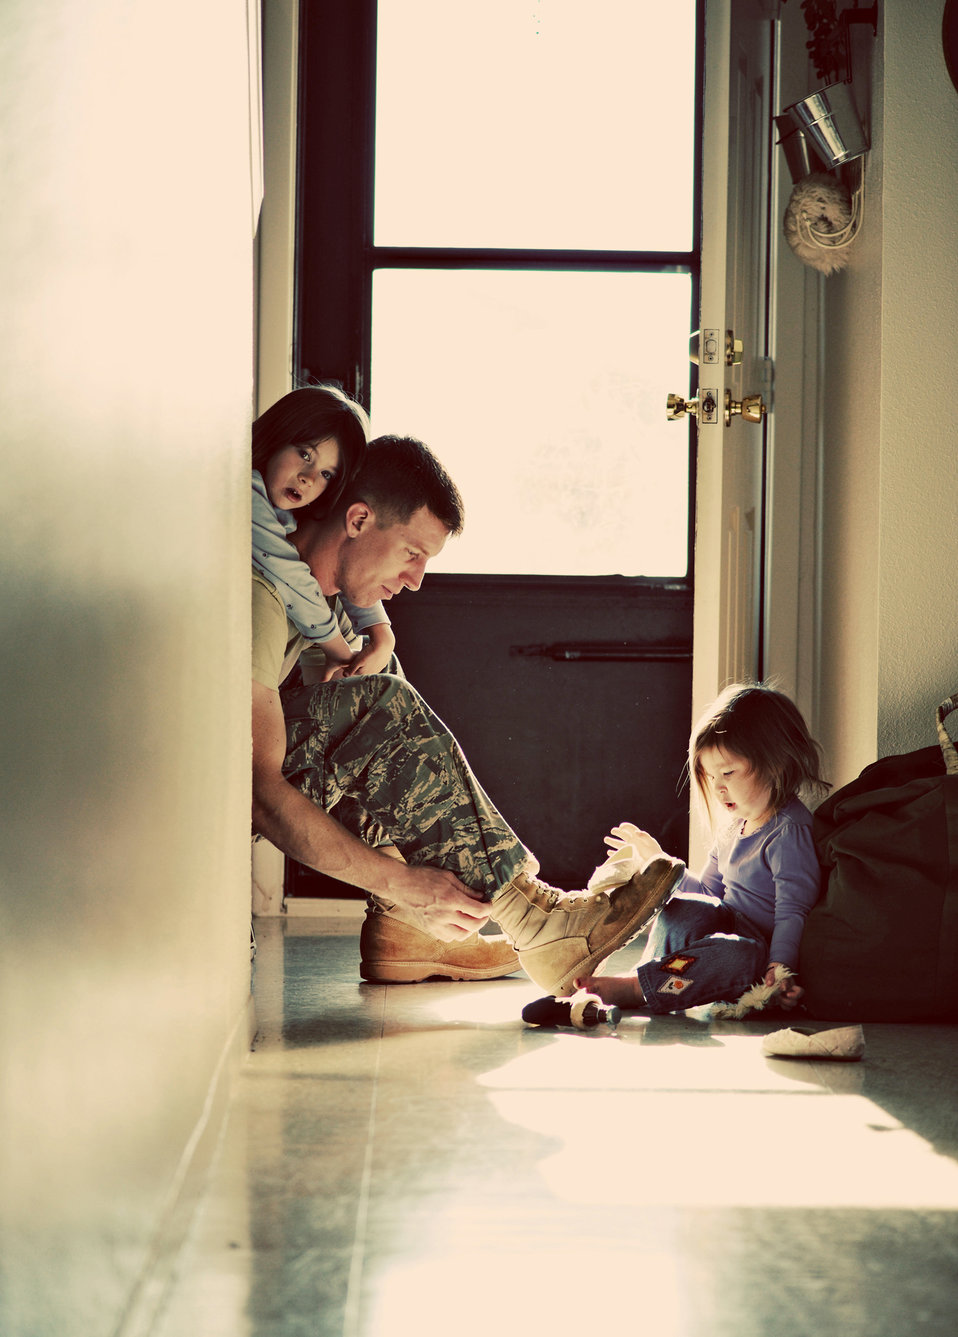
Morning with Daddy

Andrea Hubbard captured her husband, Tech. Sgt. Daniel Hubbard, and their children, as he prepared to go to work at Cannon Air Force Base, N.M. The photo,